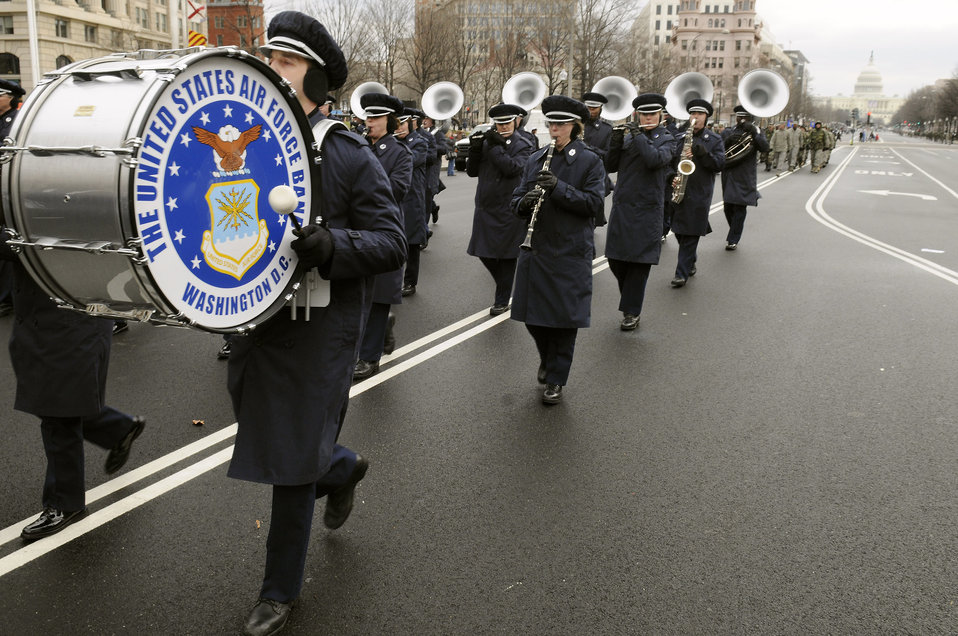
Practice makes perfect

Members of the Air Force Band march down Constitution Avenue during a practice run of the inauguration parade for President-elect Barack Obama Jan. 11 in Washington, D.C.